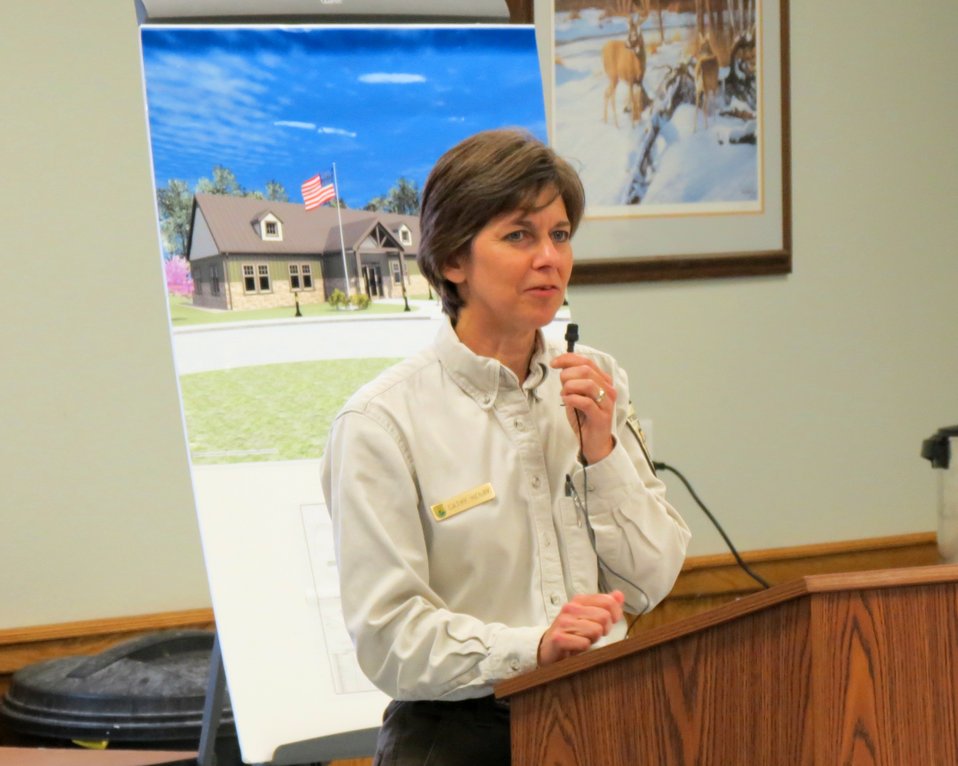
Cathy Henry

Refuge manager Cathy Henry explains the features of the new facility.